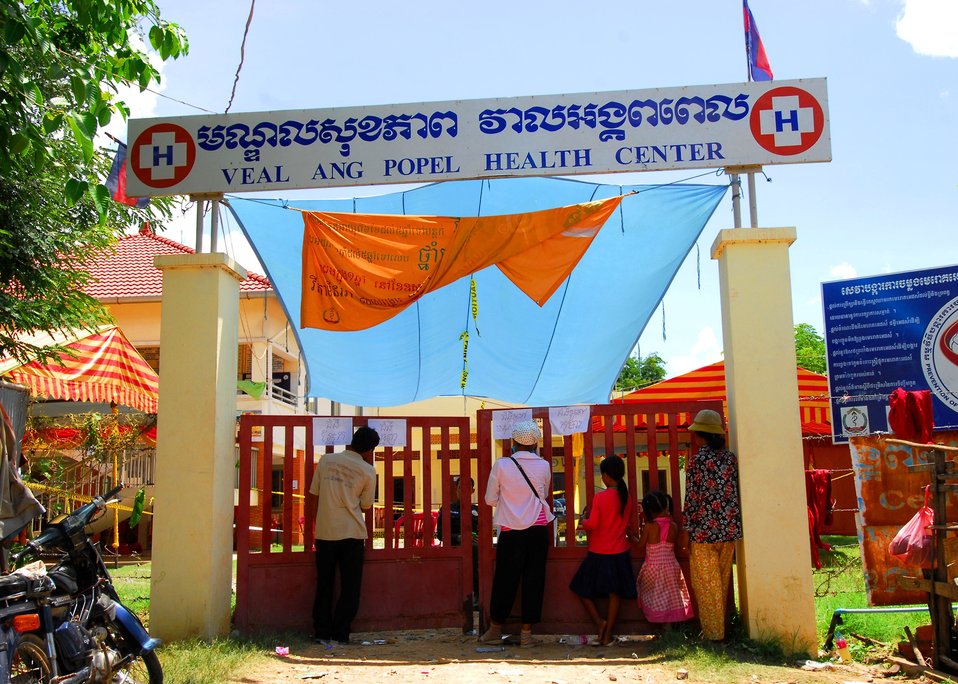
A family enters the gates of Veal Ang Popel Clinic during a medical community service event, in support of Pacific Partnership 2010, while the Military Sealift Command hospital ship USNS Mercy (T-AH 19) is in Kampong Spue, Cambodia, on June 25, 2010.